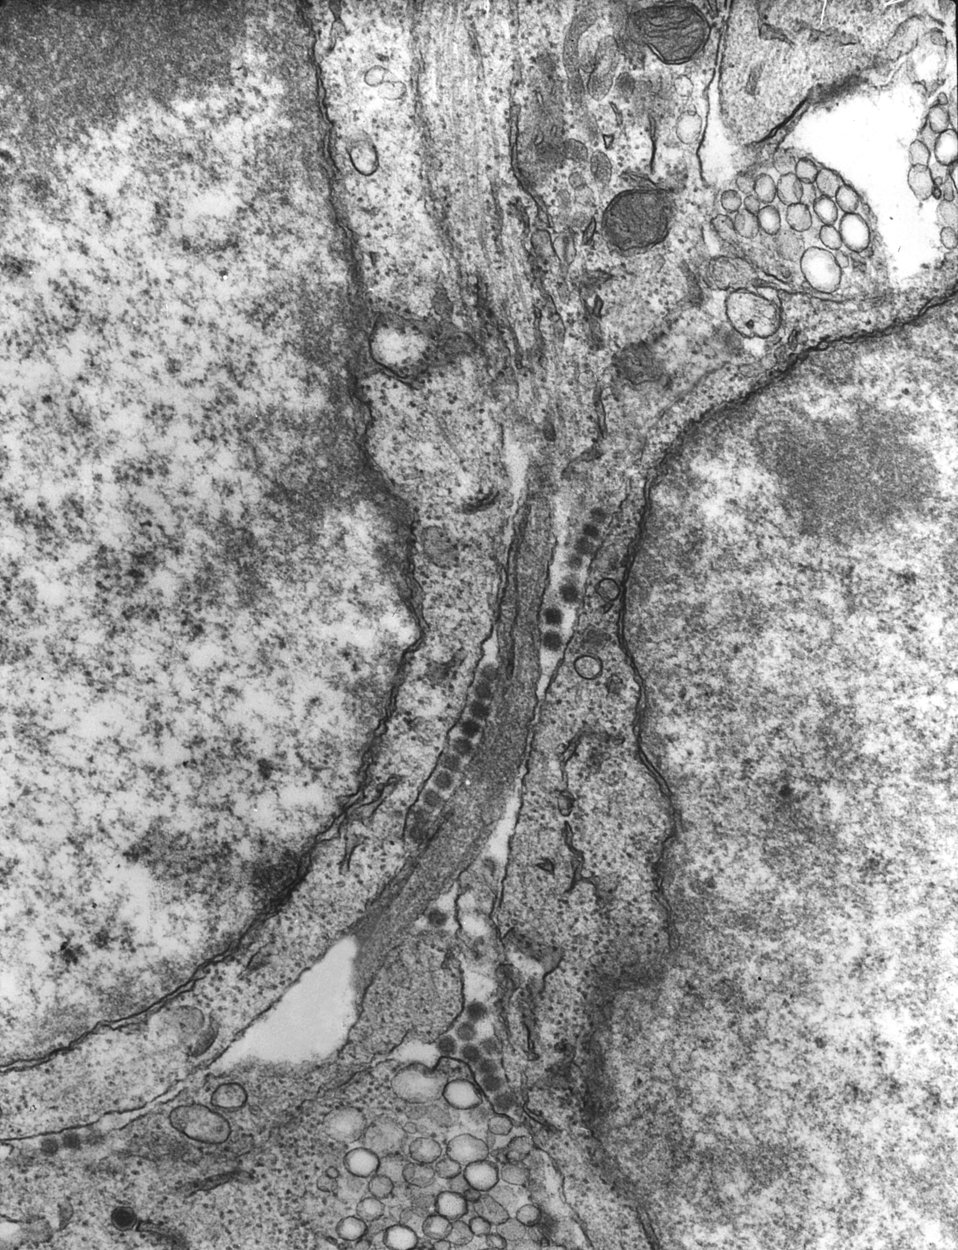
This 1975 transmission electron micrograph (TEM) revealed the presence of a number of Bunyamwera virus virions, a member of the virus family Bunyaviridae, and the genus Bunyavirus.